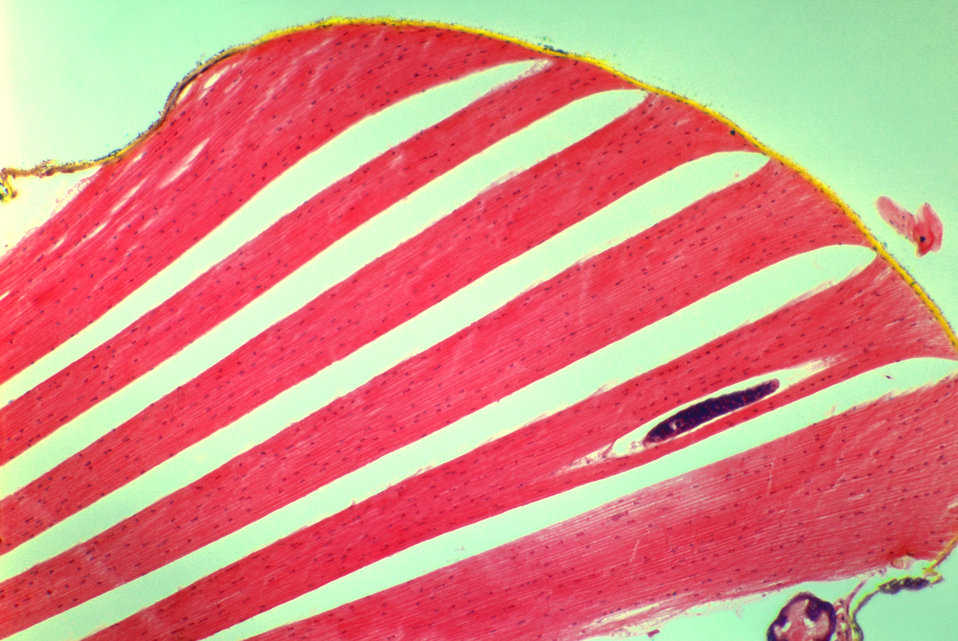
A photomicrograph revealing the histology of Onchocerca volvulus developing in a Black Fly, Simulium ochraceum.